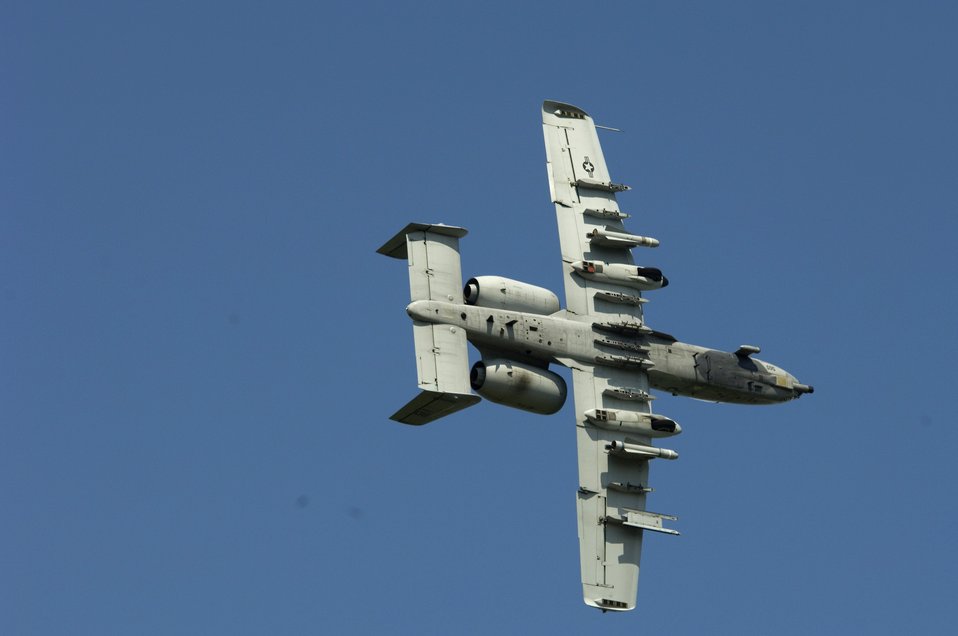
Airmen call in 'air strikes' on Louisiana communities

An A-10 Thunderbolt II from Barksdale Air Force Base, La., approaches a target on May 16, 2006, called in by a joint terminal air controller during urban combat air support training. The training took place in Deridder, La., where the 458th Combat Training Squadron from Fort Polk, La., has an agreement to allow flights over the city for more realistic urban conditions. The controllers are from Detachment 1, 458th CTS.